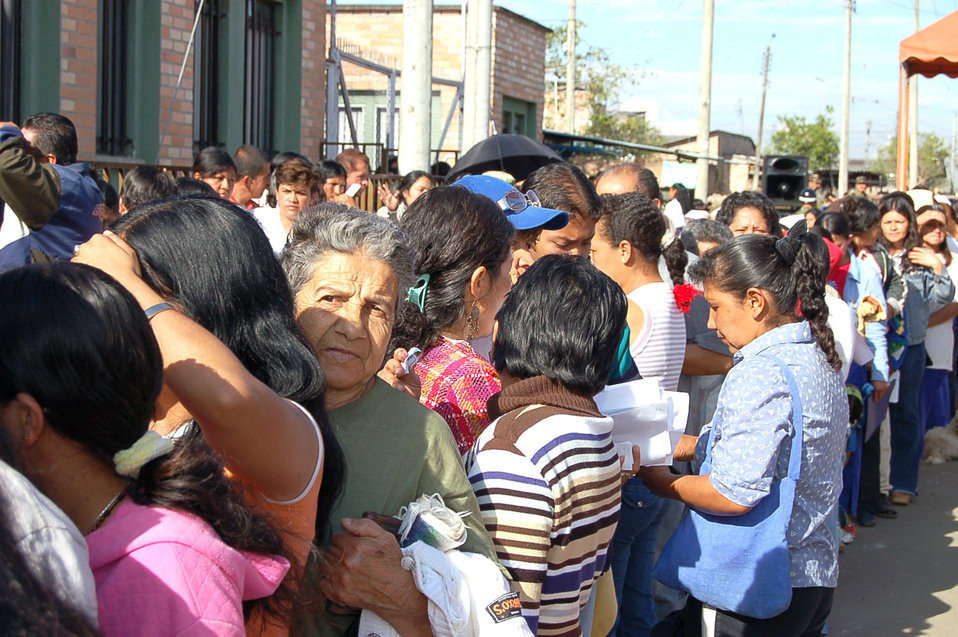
Airmen provide medical assistance in Colombia

People gather outside the Hospital Toribo Maya in Popayan, Colombia, Sept. 12 to receive treatment from a U.S. medical team performing a medical readiness training exercise.